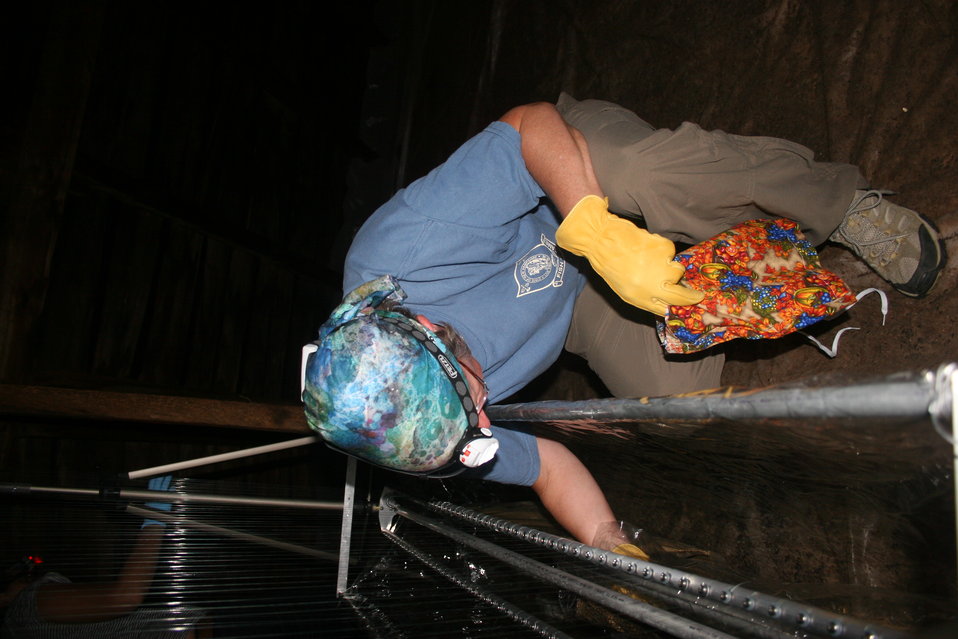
Biologist retrieves bat from harp trap

New Hampshire Fish and Game Department biologist retrieves bat from harp trap.